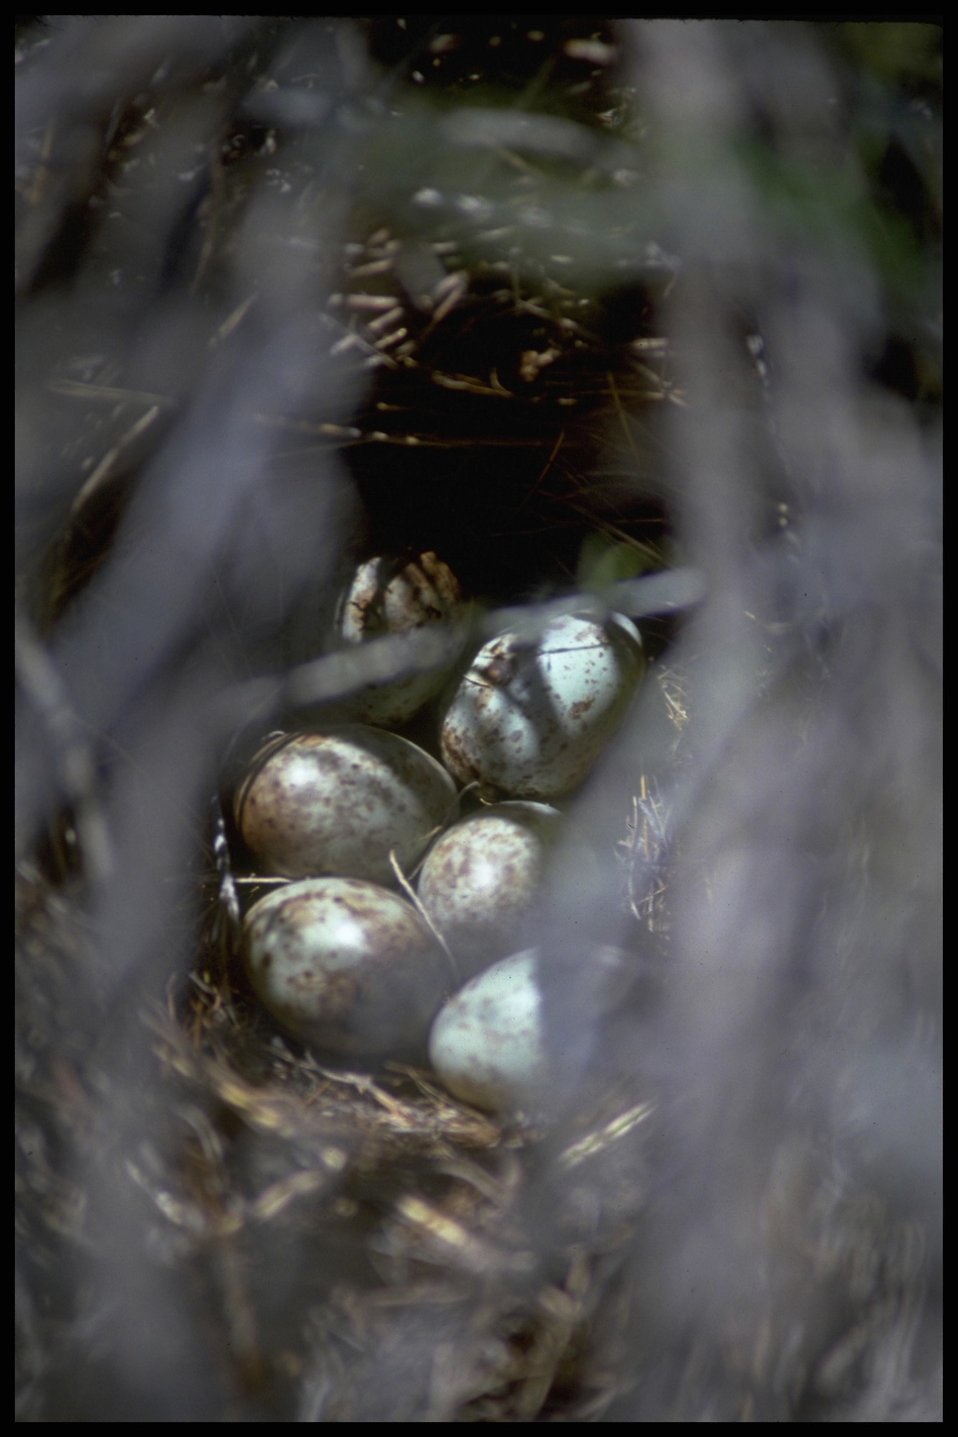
Blackbird eggs, Lakeview District.